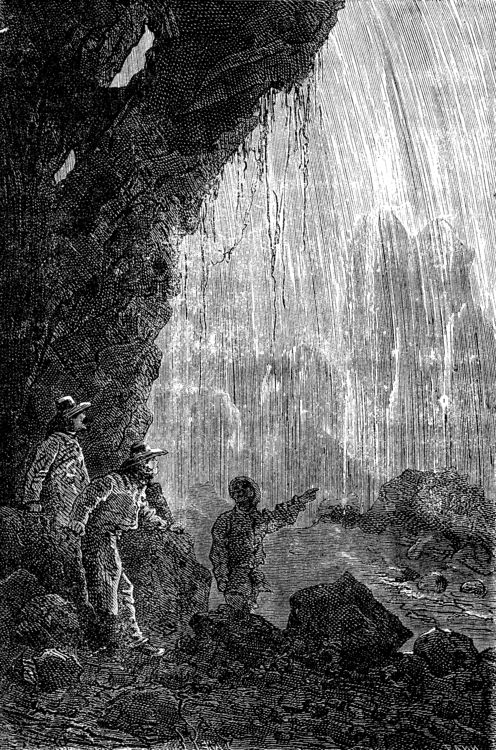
An illustration from Jules Verne's novel 'A Floating City' (1869) drawn by Jules Férat. Polski: Ilustracja powieści Juliusza Verne'a 'Pływające miasto' (1869) autorstwa Julesa Férata. Français : Jules Verne: 'Une Ville flottante' (1869), dessins par Jules Férat. Orginal text: Français : La cataracte tombait.